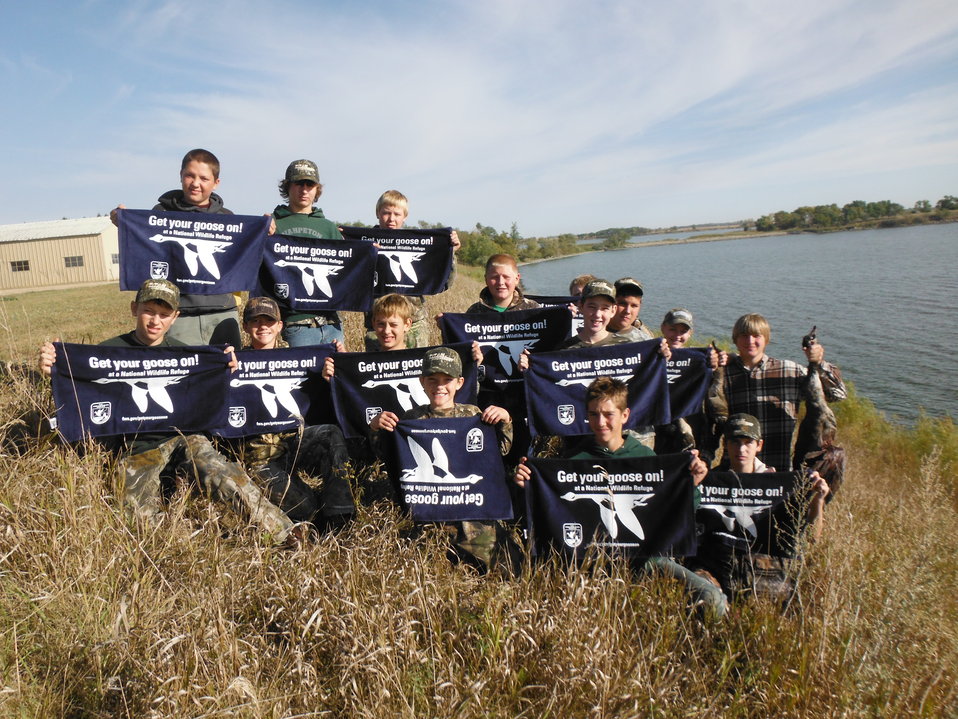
Get Your Goose On! - Youth Hunting Style

Every year the Red River Area Sportsmen of Wahpeton, ND sponsor a youth hunt at Tewaukon National Wildlife Refuge. In 2012, youth from Richland County that went out with mentors from the ND Game and Fish Department, US Fish & Wildlife Service and the Red River Area Sportsmen on Saturday during the Youth Waterfowl Hunting season. They hunted on Waterfowl Production Areas and State Wildlife Management Areas. Before the shooting season, the sportsmen took the kids out practice shooting and practiced waterfowl identification. After a morning of hunting, the Red River Area Sportsmen provide a breakfast for the kids and volunteers. Such a great way to get kids outdoors and exposed to hunting that might never go out otherwise!